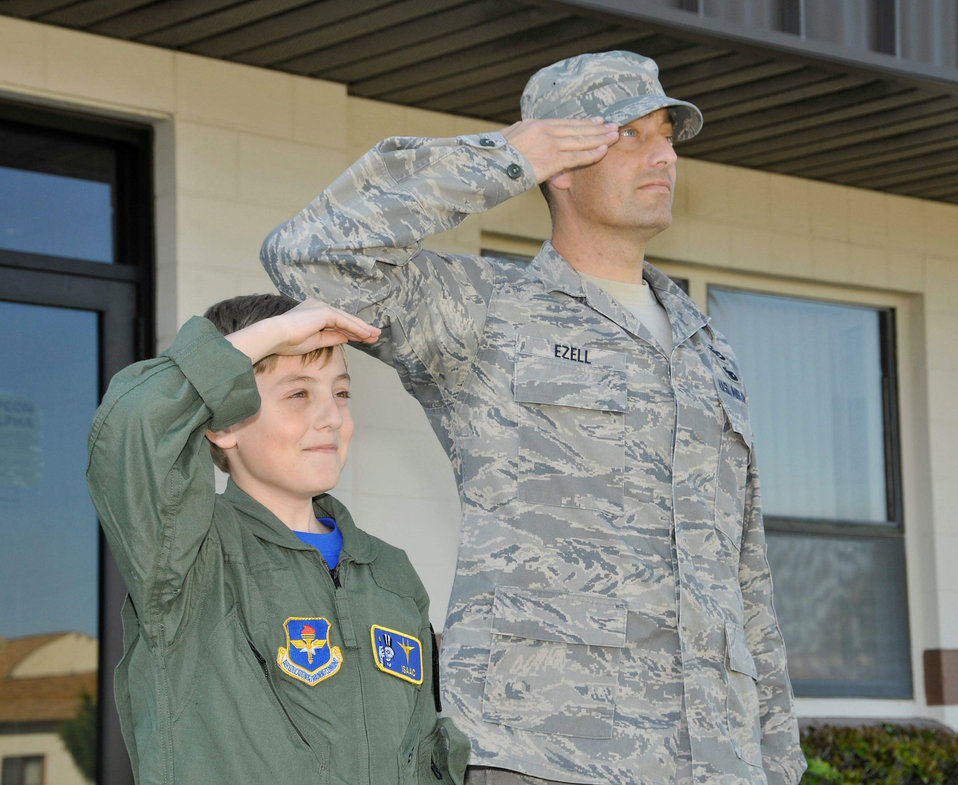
Child becomes pilot for a day

Tech. Sgt. Joe Ezell and son Isaac, salute the flag during Retreat, which signifies the end of the day April 9, 2010, at Tyndall Air Force Base, Fla. Isaac recently participated in the Tyndall AFB Pilot for a Day program. Sergeant Ezell is a 601st Air and Space Operations Center operational assessments technician.